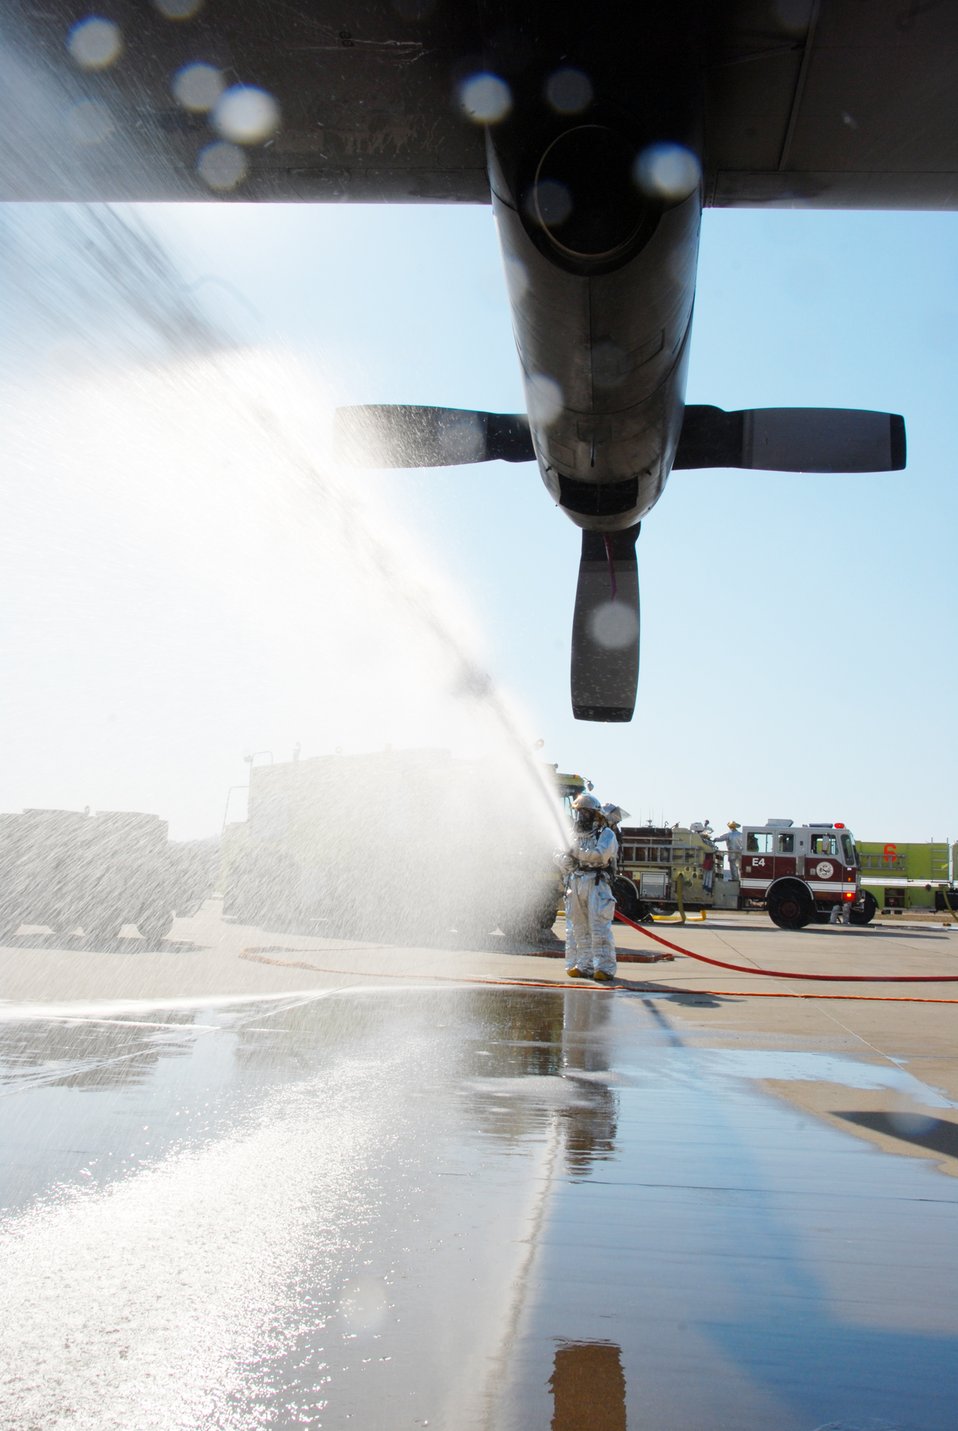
You're all wet

A member of the wing fire department sprays a C-130 Hercules engine to support an aircrew egress exercise at the West Virginia Air National Guard's 130th Airlift Wing in Charleston.